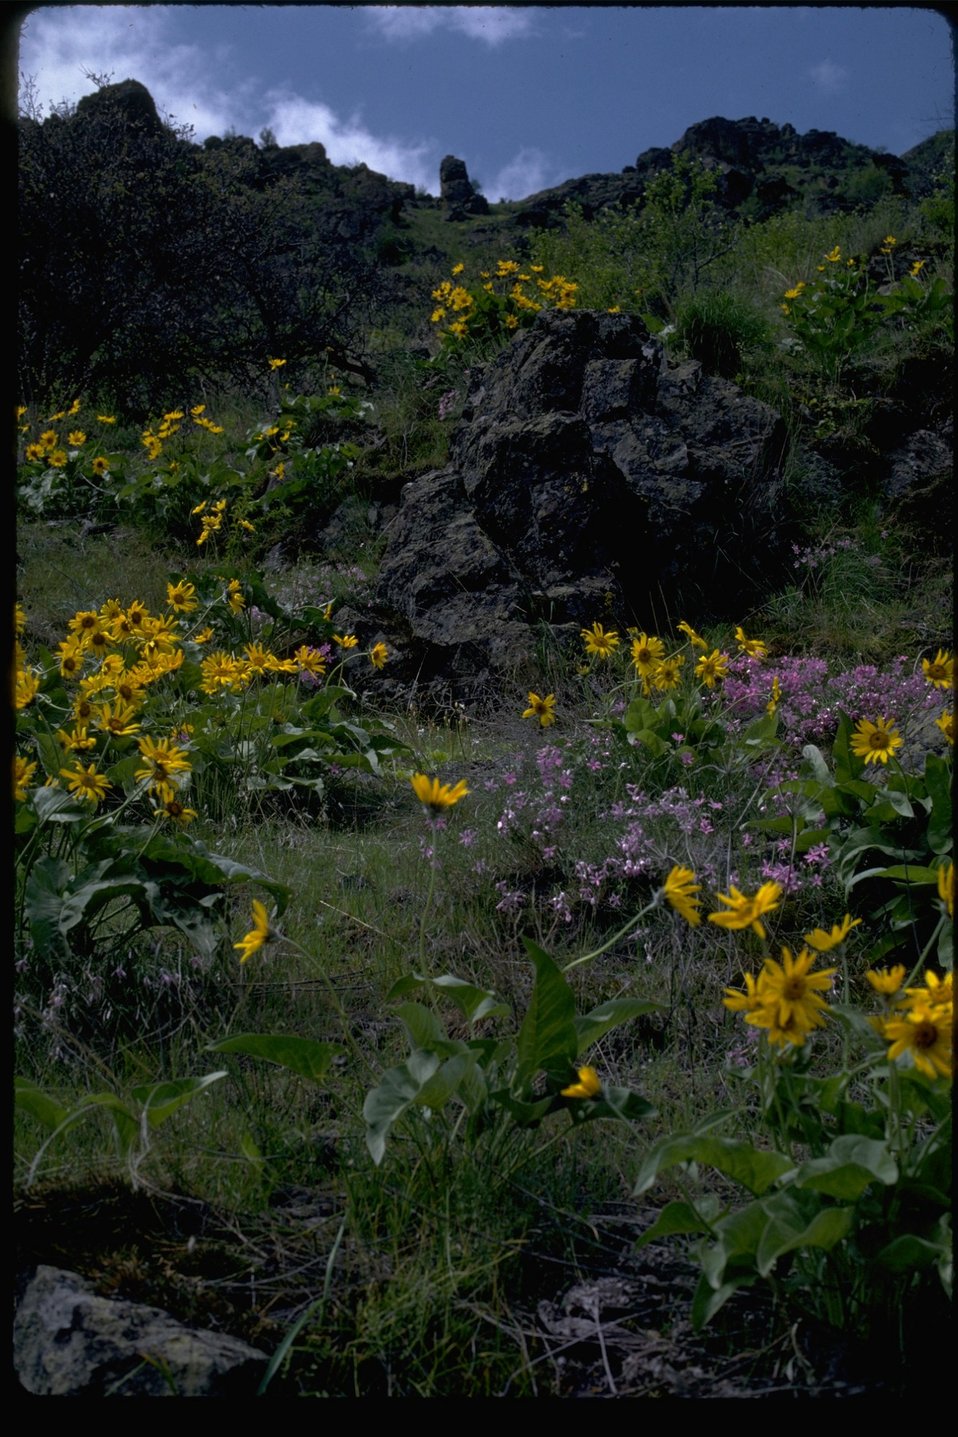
Lots of wildflowers in the McGraw Creek Wilderness Study Area. OR 6-1